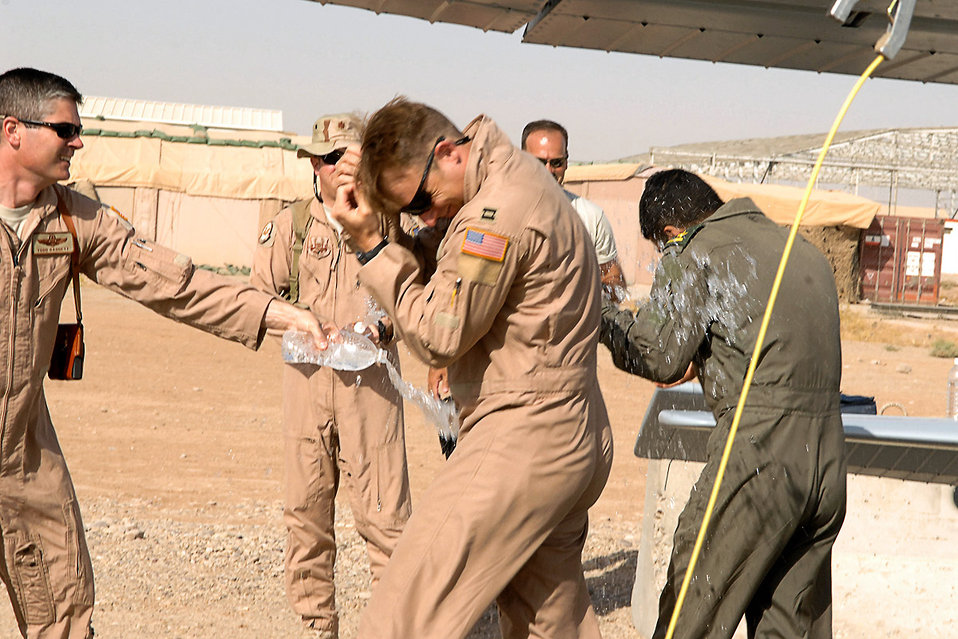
Iraqi air force reaches 2,000-hour milestone

Lt. Col. Todd Daggett (left), 52nd Expeditionary Flying Training Squadron deputy of operations, along with other Airmen from the 52nd EFTS and Iraqi air force Flying Training Wing, congratulate the crew of a Cessna 172 July 13 at Kirkuk Regional Air Base, Iraq, after their historic training sortie that surpassed 2,000 flight training hours.